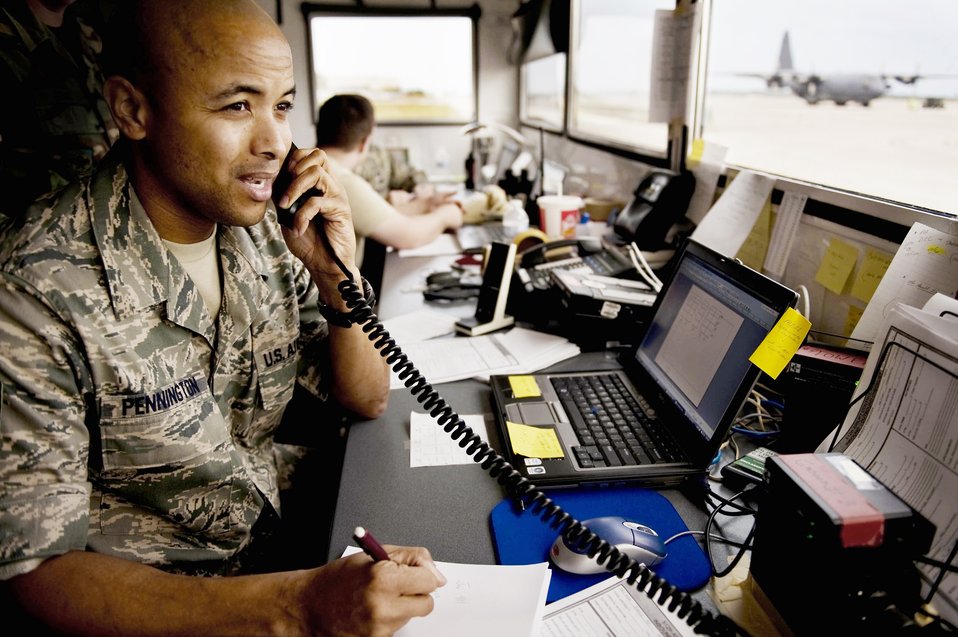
Operation Unified Response

Members of the 512th Airlift Control Flight help control airflow at Homestead Air Reserve Base, Fla., as an influx of aircraft operate out of Homestead ARB to assist with the Haiti earthquake relief efforts Jan 24, 2010.